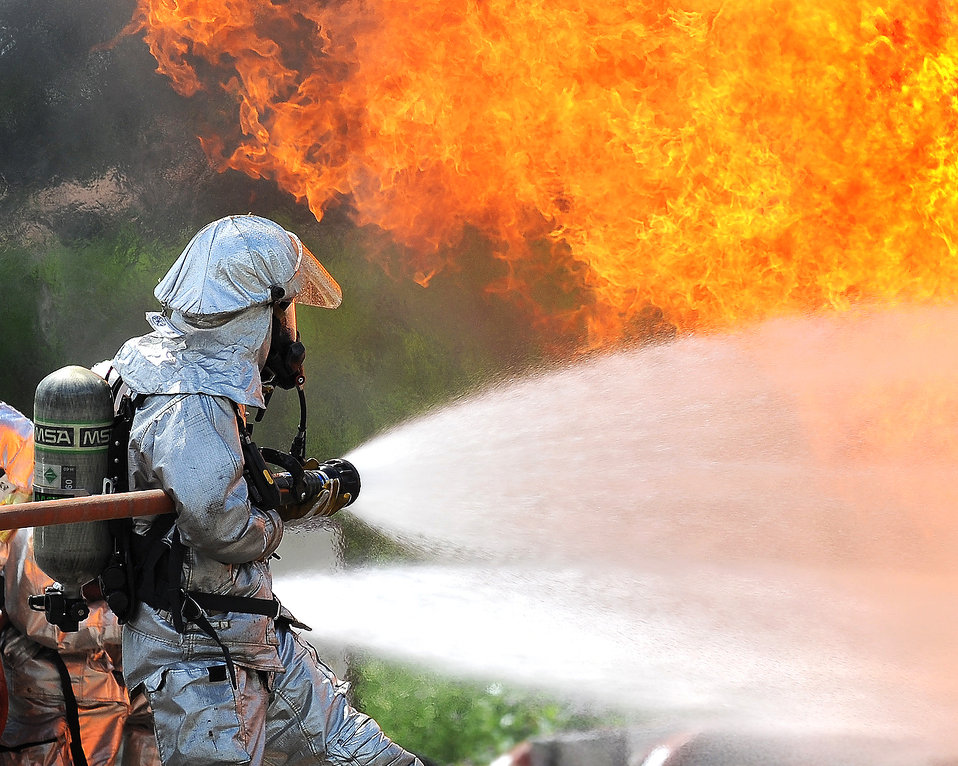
Taking control of the beast

Firefighters battle a roaring fire while participating in a live fire-response exercise at the Combat Readiness Training Center July 21, 2010, in Alpena, Mich. The firefighters are with the Michigan Air National Guard's 127th Wing at Selfridge Air National Base.